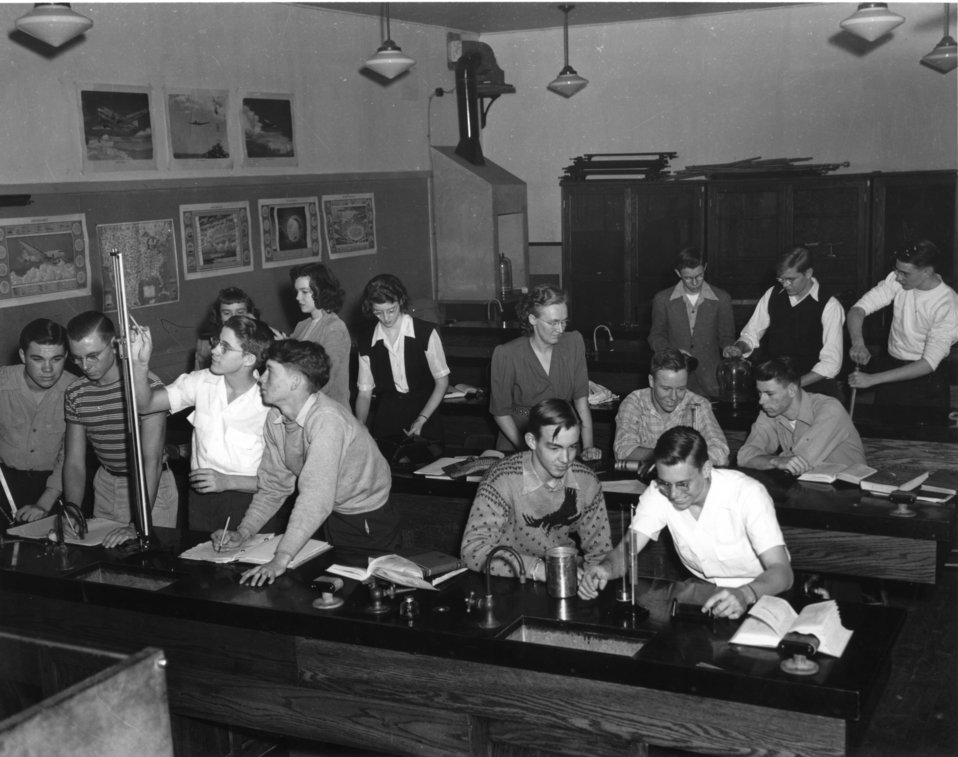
Schools at Oak Ridge